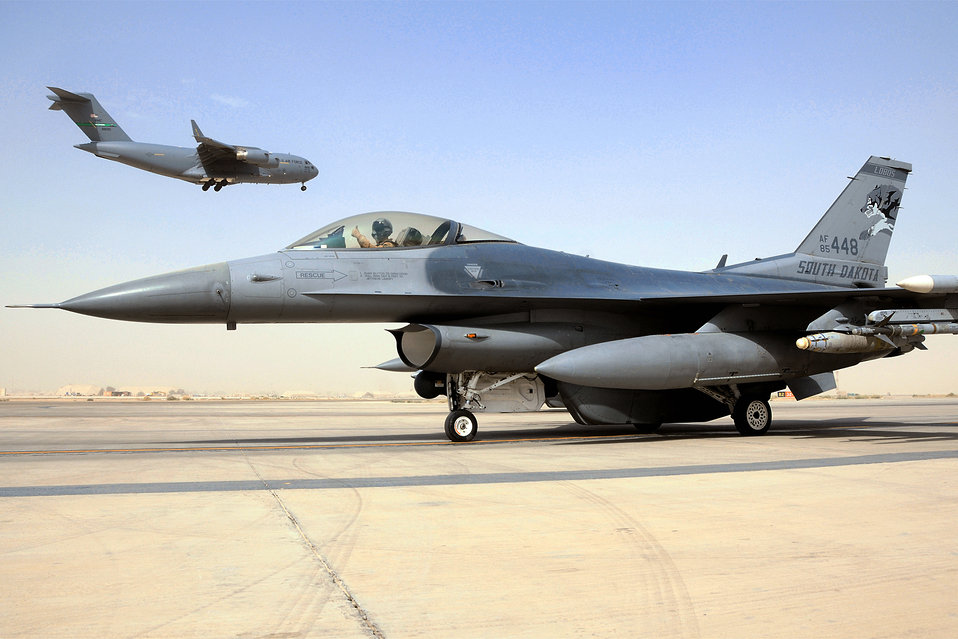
Waiting for big brother

Capt. Eric Cleveringa prepares to launch an F-16 Fighting Falcon for a mission July 31, 2010, from Joint Base Balad, Iraq. Captain Cleveringa is assigned to the South Dakota Air National Guard's 114th Fighter Wing in Sioux Falls.